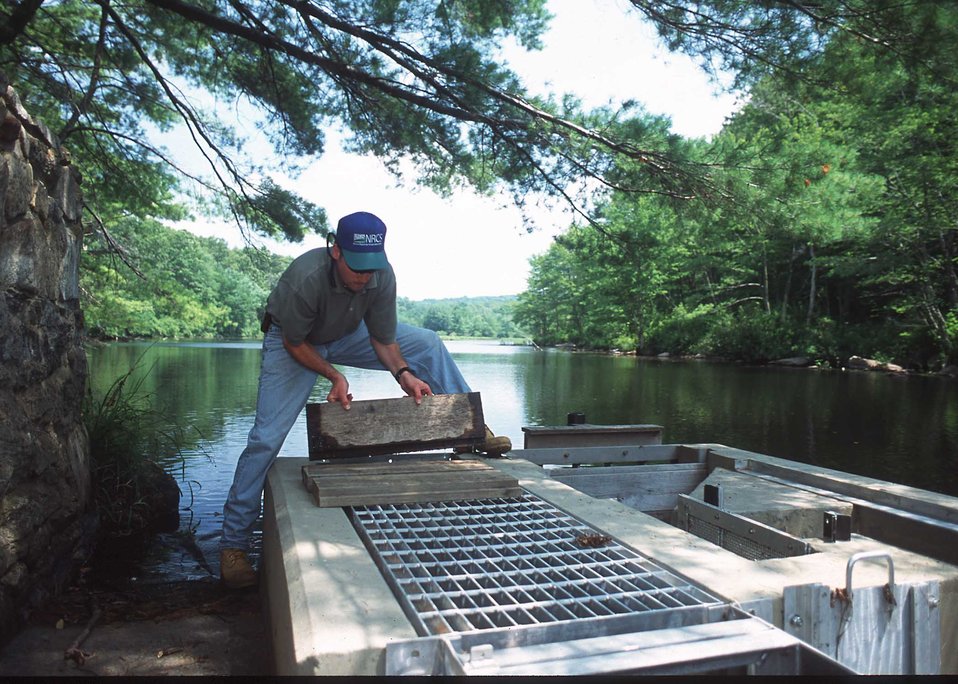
NRCS Conservationist, Todd Bobowick installing stop-logs in an Alaskan Steeppass Fishway at the end of a springtime spawning run.